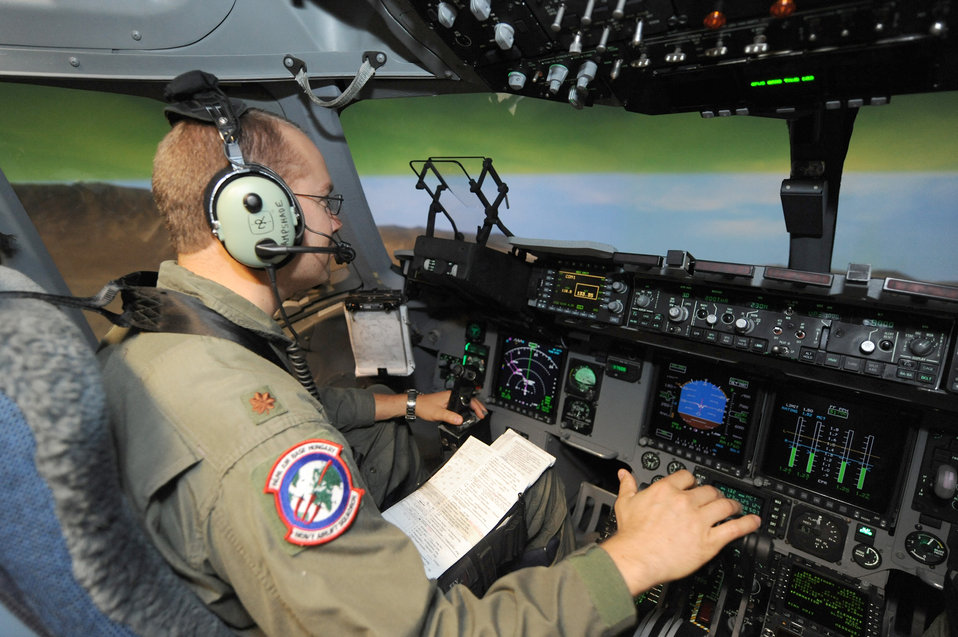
Multinational wing

Maj. Brian Nicosia conducts training in the C-17 Globemaster III simulator June 21, 2010, on Joint Base Charleston, S.C. Major Nicosia is the chief of tactics with the Heavy Airlift Wing at Pápa Air Base, Hungary, and is visiting Joint Base Charleston for quarterly pilot training.